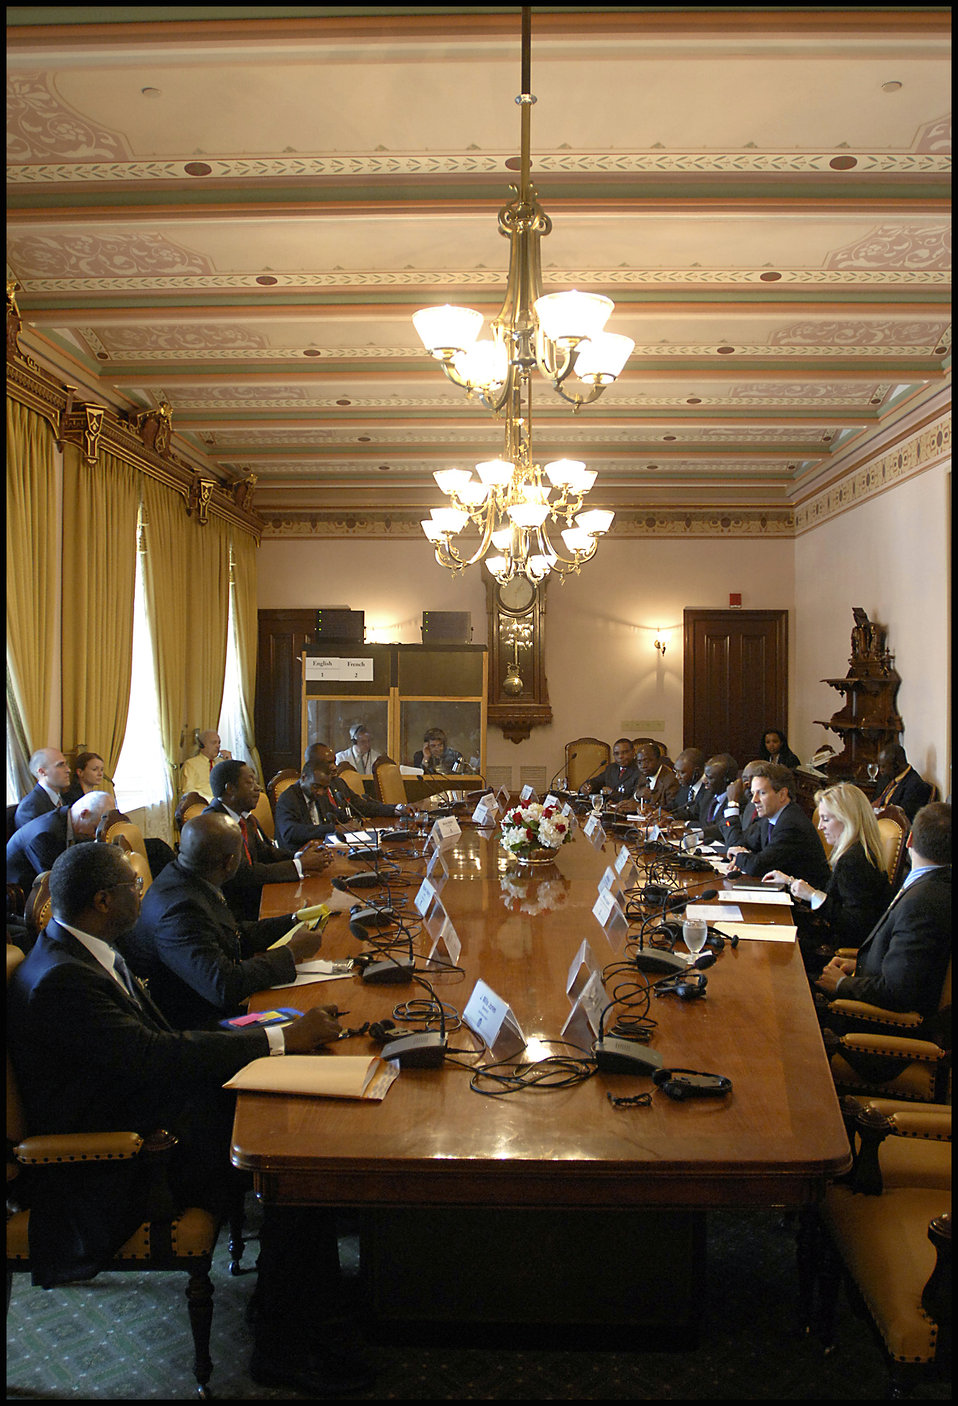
Roundtable with African Ministers

On April 25, 2009, Secretary Geithner hosted a roundtable with African Ministers at Treasury.